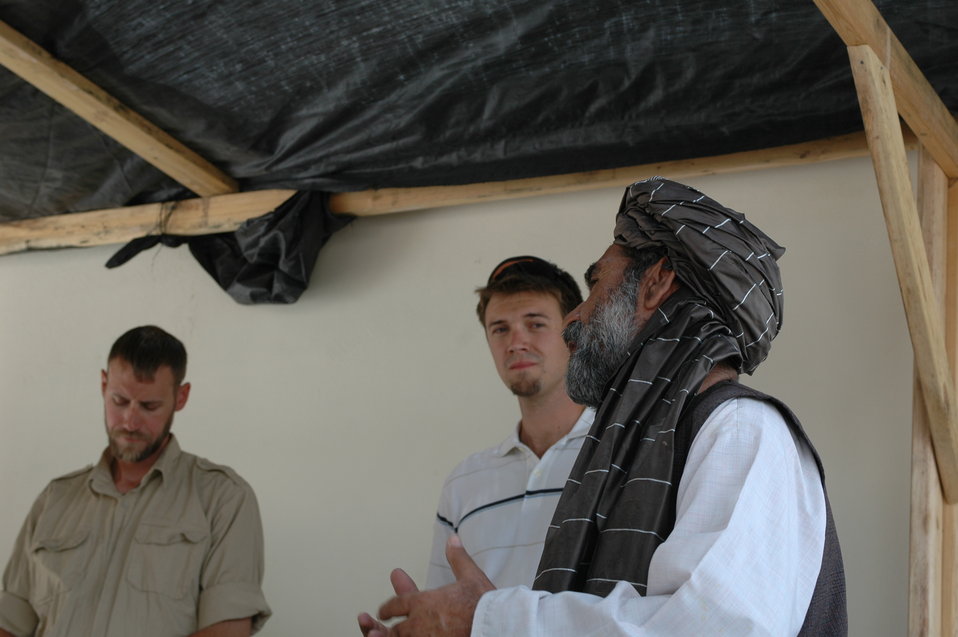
CODEL Berman